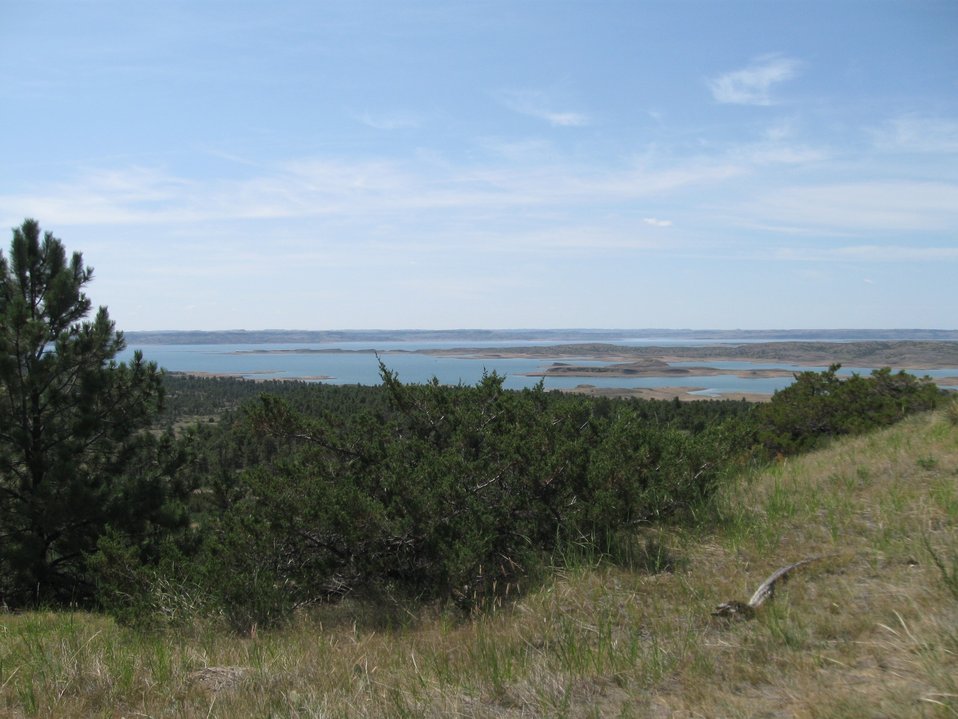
Fort Peck Lake

Overlooking Ft. Peck Lake on Charles M. Russell National Wildlife Refuge in Montana.